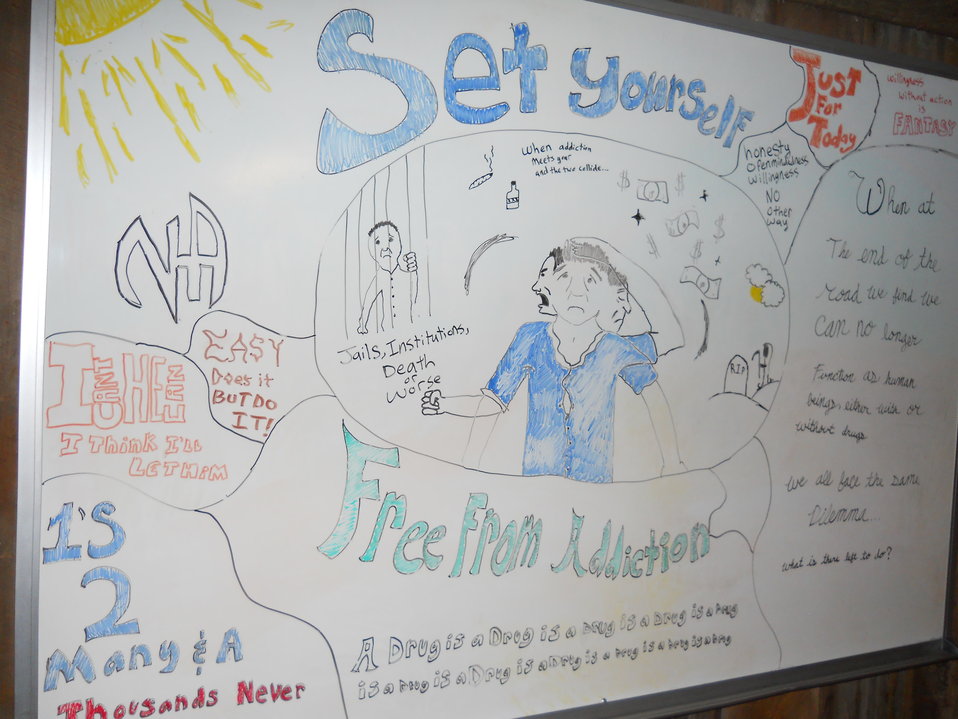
Burnside Group Home, NDFW 2013

Burnside, Ky. NDFW 2013 events.